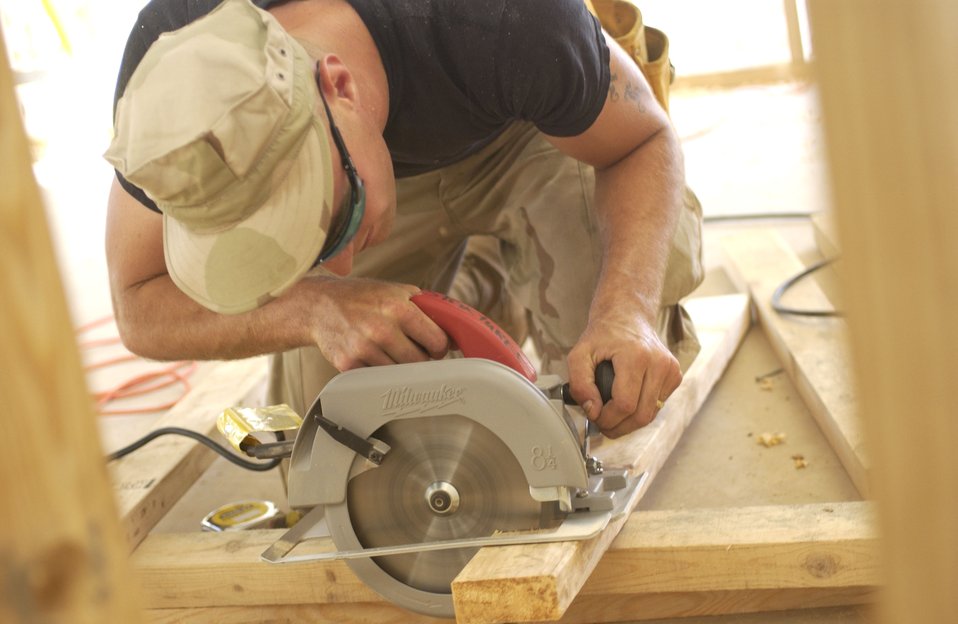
Office renovation

Senior Airman Josh Jankoski saws lumber to build a wall during an office building renovation at Balad Air Base, Iraq, on Thursday, April 20, 2006. Airman Jankoski is with the 557th Expeditionary Red Horse Squadron.